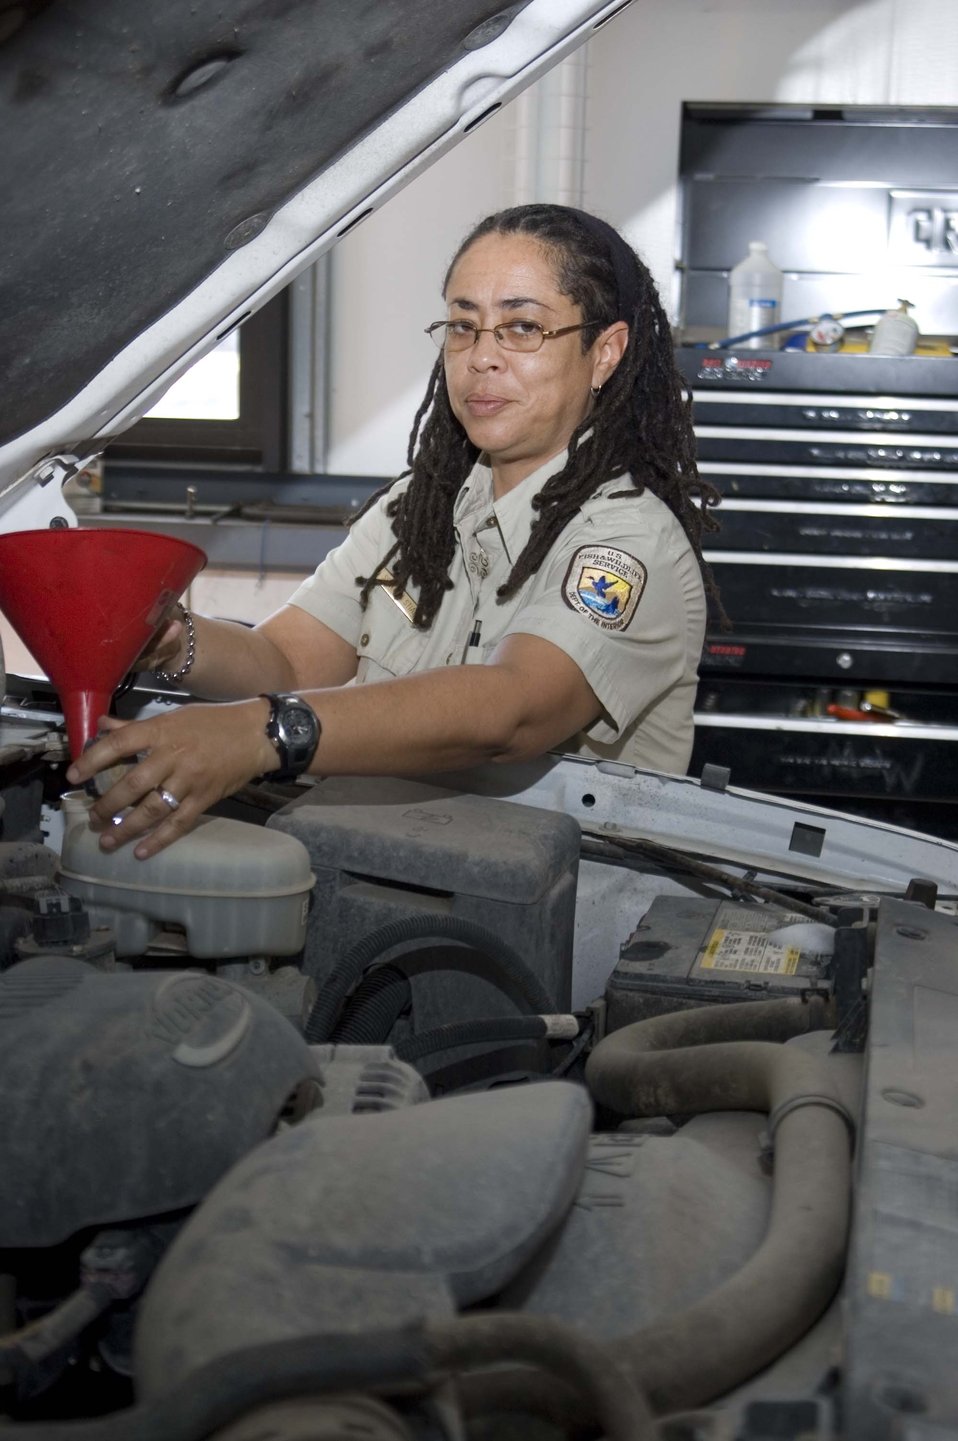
Shelley Stiaes, refuge manager of St. Vincent National Wildlife Refuge in Florida, performs an oil change on a refuge truck at Bayou Sauvage National Wildlife Refuge in New Orleans.